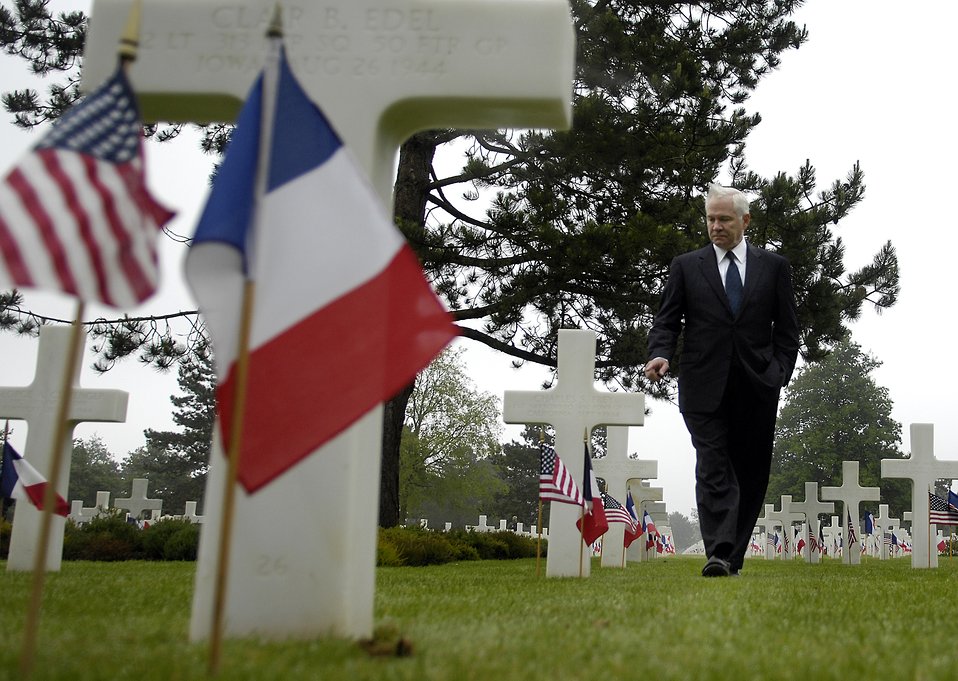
Remembering D-Day

Secretary of Defense Robert M. Gates tours the American Cemetery in Normandy, France, during the 63rd Anniversary of D-Day June 6.